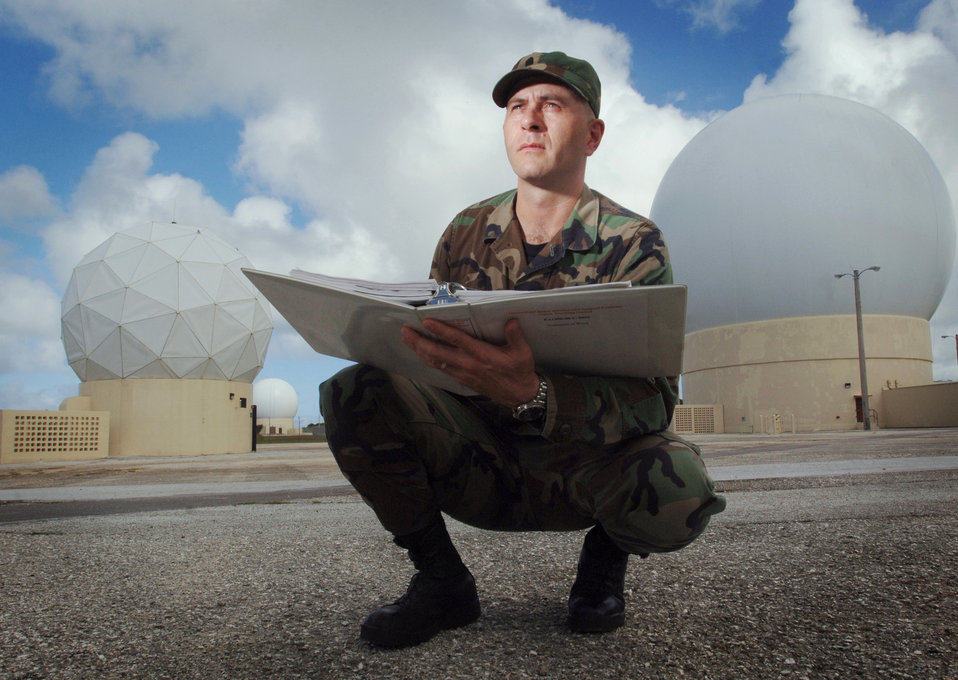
Space security

ANDERSEN AIR FORCE BASE, Guam (AFPN) -- Tech. Sgt. Greg Butikofer references his technical order during an inspection of radome antennas at his facility. Sergeant Butikofer is a quality assurance evaluator with the Detachment 5, 22nd Space Operations Squadron here. Their mission is to execute on demand, real-time, command and control operations for launch and operations of 170 Department of Defense, national, allied and civilian satellites.